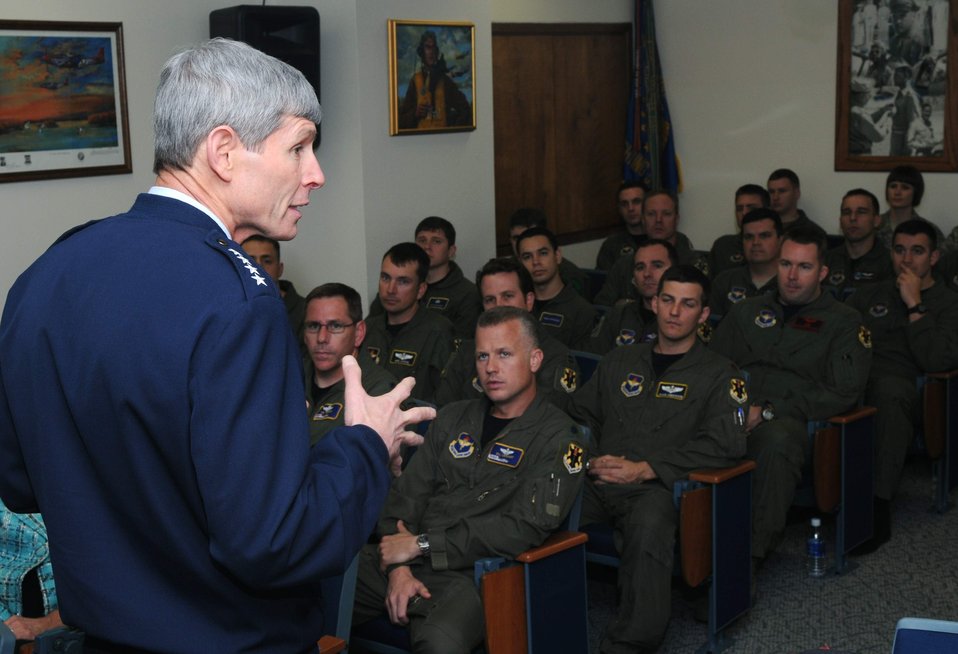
CSAF visits UAS class

Air Force Chief of Staff Gen. Norton Schwartz addresses student and instructor aviators Feb. 19 in the 99th Flying Training Squadron auditorium at Randolph Air Force Base, Texas.